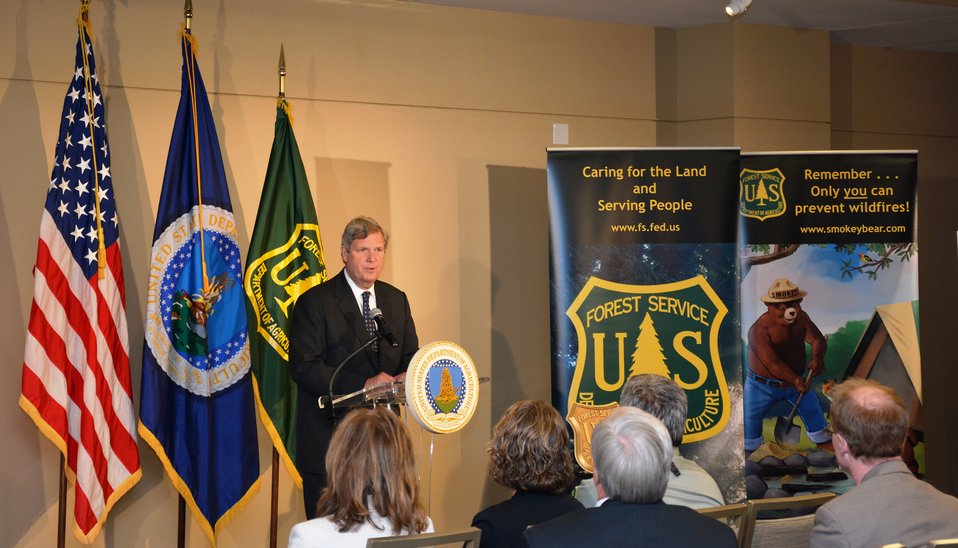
Agriculture Secretary Tom Vilsack addresses guests and press at the History of Colorado Center to announce action to combat insects and diseases that weaken forests and increase fire risk in Denver, CO on May 20, 2014.